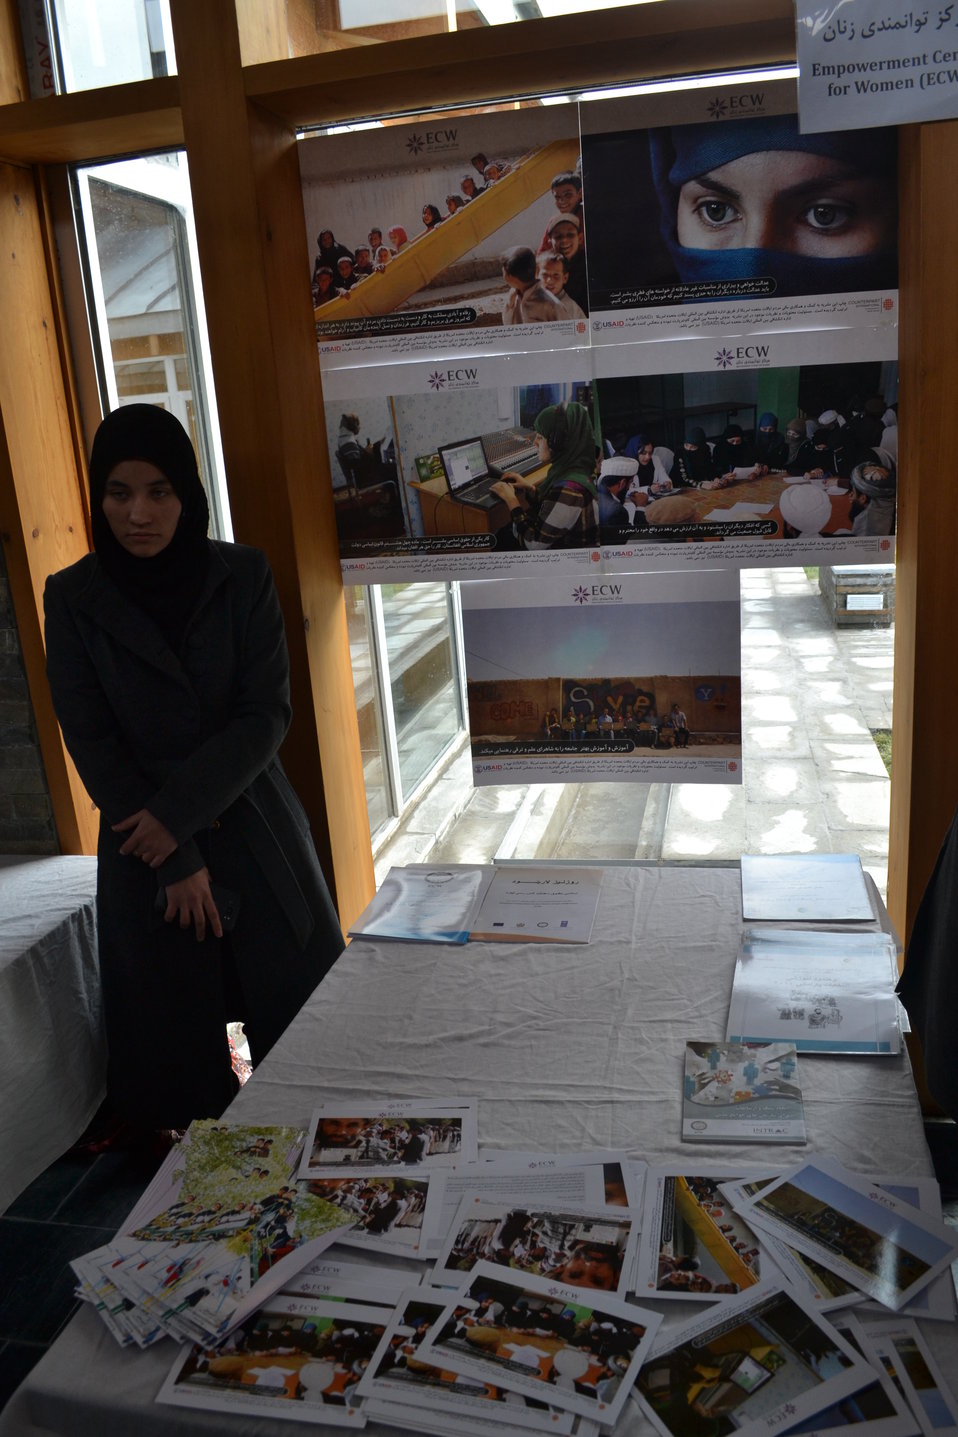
Human Rights Day at the Afghan Center, Kabul University